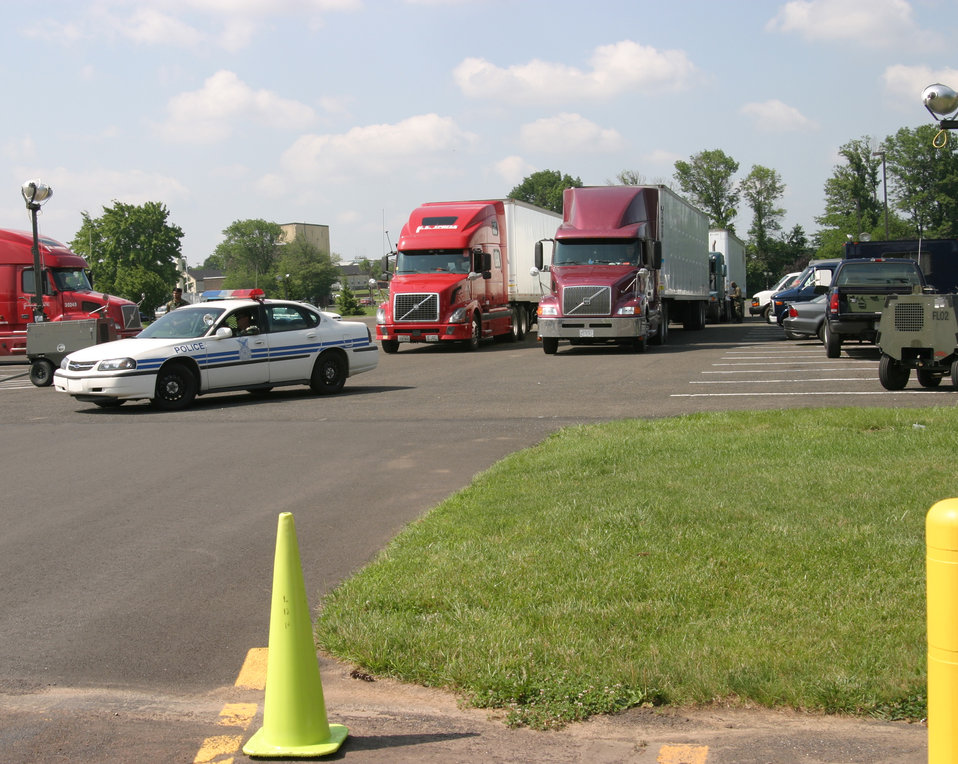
Bases work with FEMA to provide aid

Trucks are being pre-positioned at various staging points around the country to accelerate the delivery of supplies to disaster victims. This processing area is at Willow Grove Air Reserve Station, Pa.